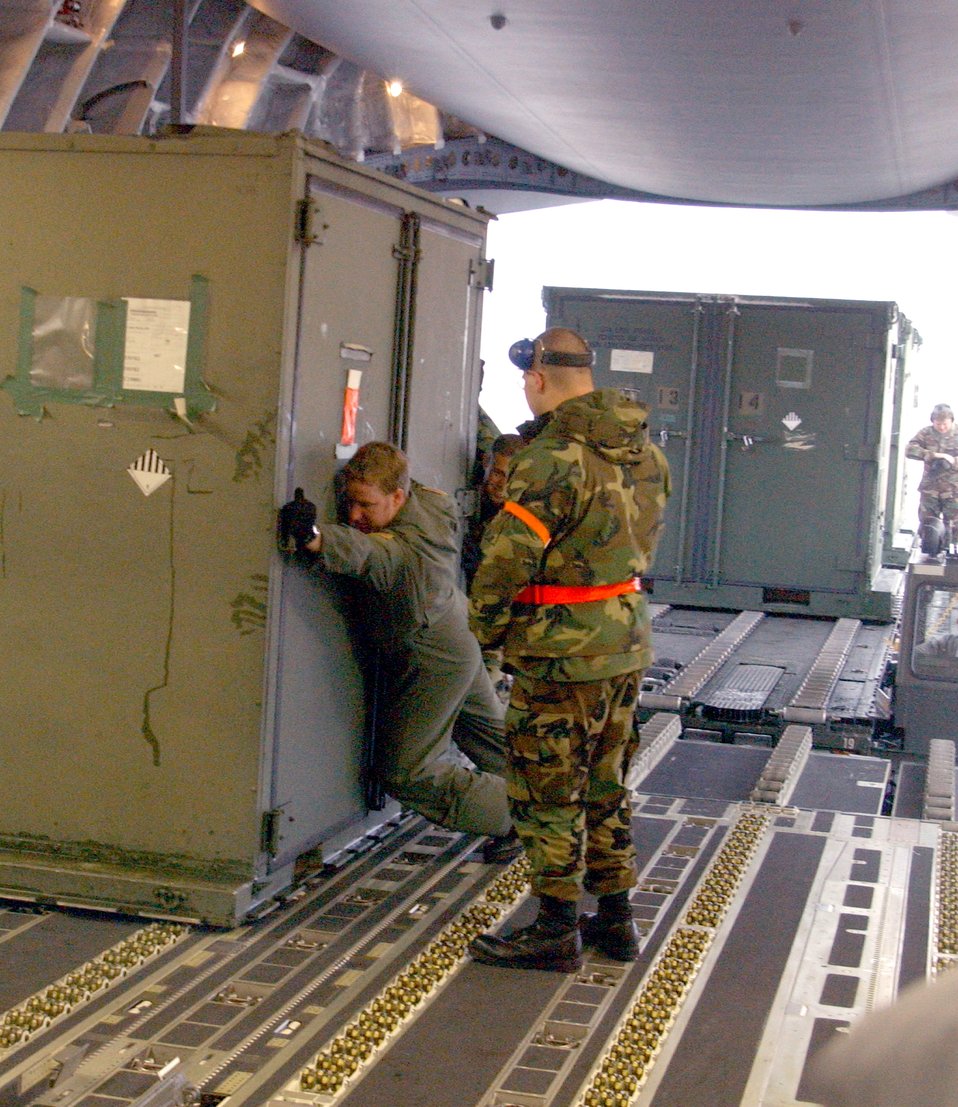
Yokota Airmen keep steady pace in providing relief

YOKOTA AIR BASE, Japan -- Airmen from the 374th Airlift Wing load supplies onto a C-17 Globemaster III here Dec. 31. The aircraft is headed for a forward-operating base in Utapao, Thailand. The supplies are intended to help other Airmen conduct missions supporting tsunami relief efforts in Thailand, Indonesia, Sri Lanka and India. About 170 Airmen from here have also deployed to support relief operations throughout the region.